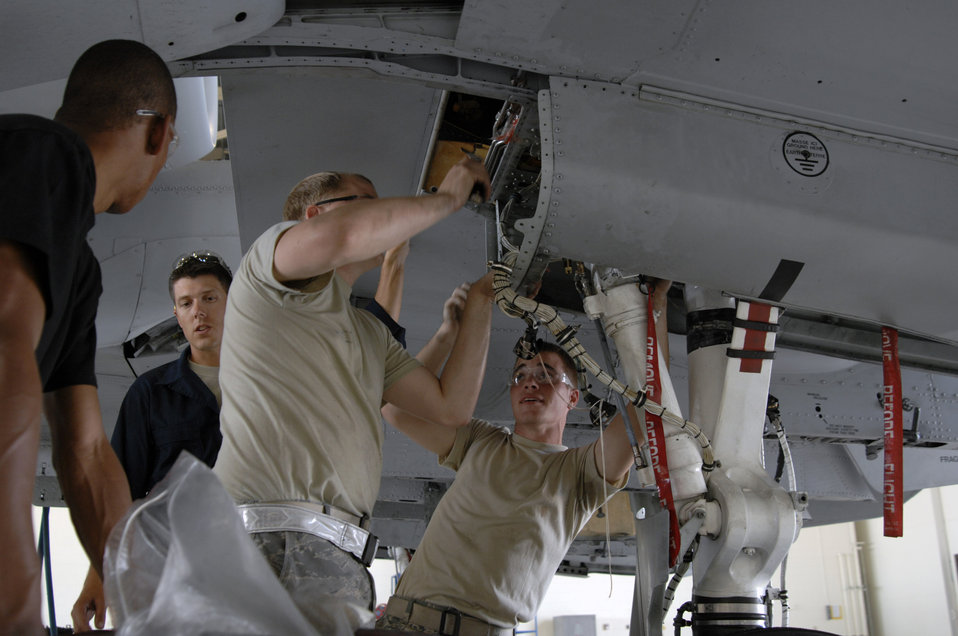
ACC maintainers expedite A-10 inspection actions

Maintainers at Moody Air Force Base, Ga., prepare to inspect an A-10 Thunderbolt II for wing frame cracks Oct. 4. A Time Compliance Technical Order was issued by Air Force Materiel Command officials identifying certain A-10s that needed to be inspected. The Airmen are assigned to the 23rd Equipment Maintenance Squadron.